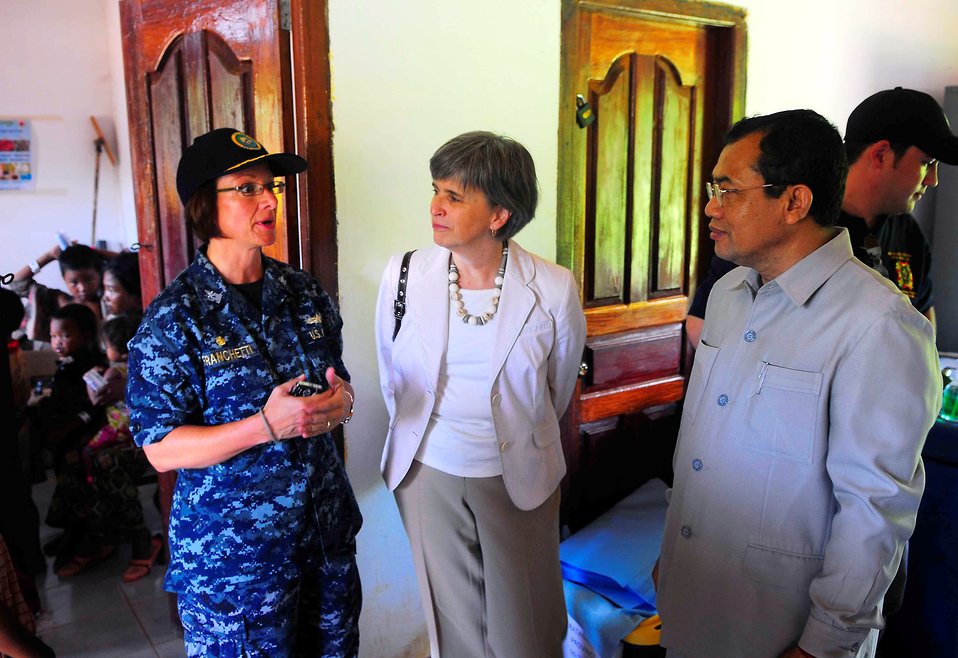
PP2010 Commander, Capt. Franchetti, Speaks With Ambassador Rodley and a Cambodian Government Official

The commander of Pacific Partnership 2010, Capt. Lisa M. Franchetti, explains the medical site capabilities and operations to U.S. Ambassador to Cambodia Carol Rodley and a Cambodian government official during their tour of the medical civic action program in Rattanakiri, Cambodia, in support of Pacific Partnership 2010 on June 18, 2010.